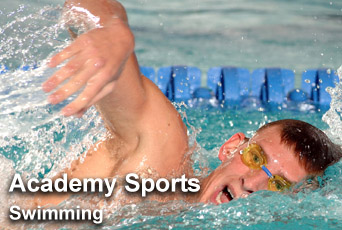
Academy sports: Swimming

For up-to-date scores on all U.S. Air Force Academy sports, visit their Web site at www.goairforcefalcons.com.